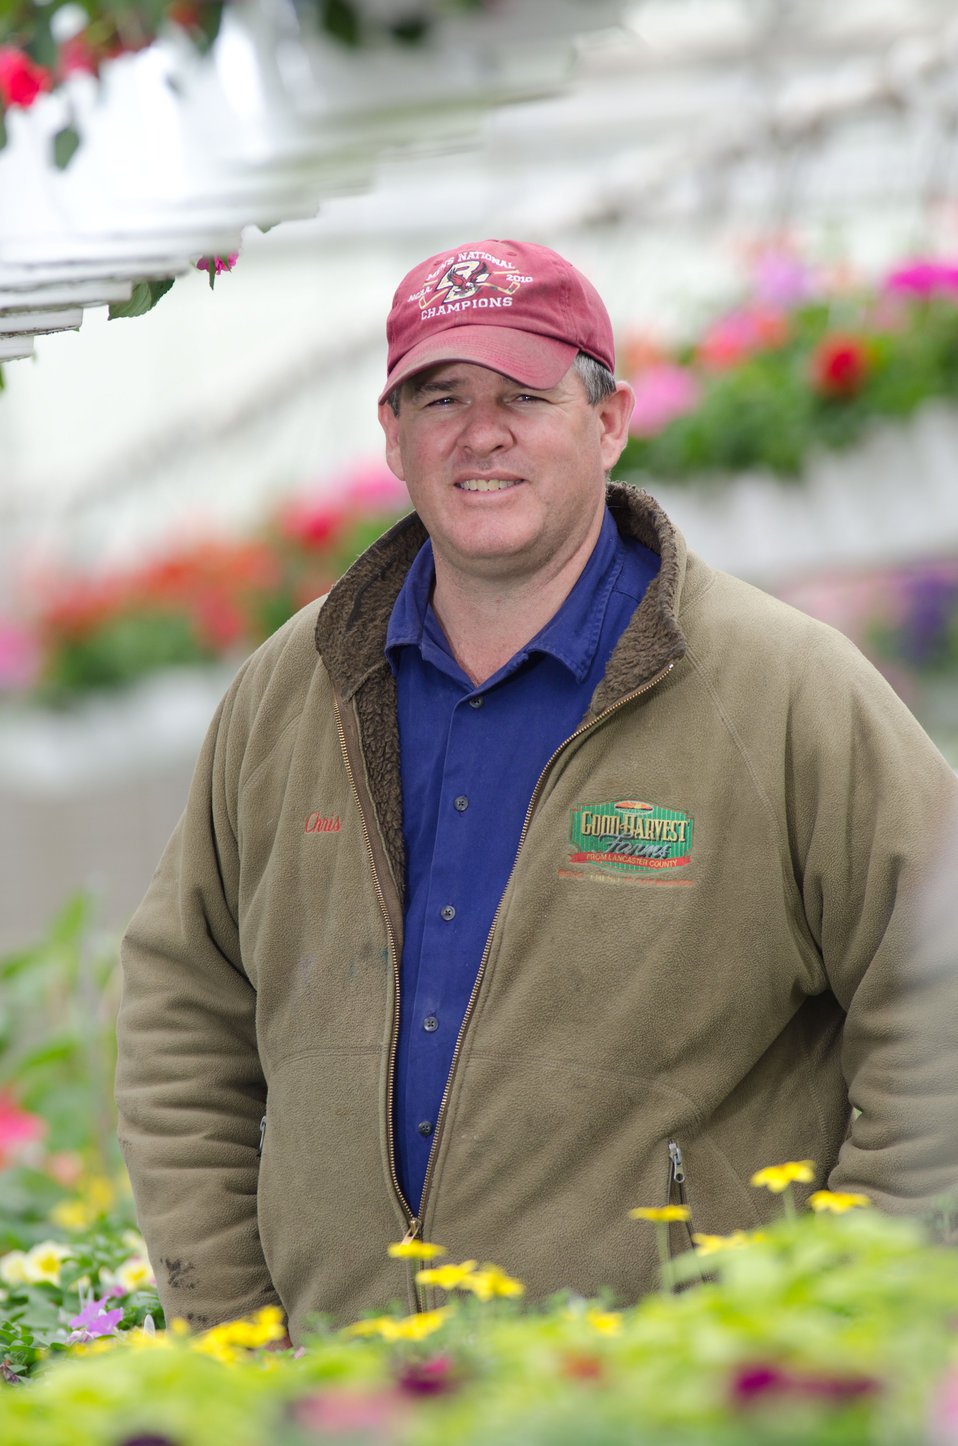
Chris Powell watches his business blossom at Good Harvest Farm on April 19, 2011 in Strasburg, PA. The nursery completed a Rural Energy for America Program (REAP) grant supported renovation six months ago that replaced an 80-year old structure with a new 4,000 sq. ft. facility that features energy efficient glass roof with curtains that block or trap heat, radiant heaters in or above the floor, and the replacement of an oil-fired hot-air furnaces with propane fueled boilers that supply fin-tube and cement embedded tube elements with hot water. With current fuel prices, there is a projected 2011 energy cost savings of more than $20,000; a 40% reduction in energy costs – exceeding projected savings. Plant health and quality has improved and been more consistent because the temperature and humidity is computer controlled and distributed evenly throughout the facility. Utilizing sensors and a roof mounted weather station the system can maintain four different climate zones 24-hours a day. Two 1,000,000 BTU propane fueled boilers heat the water to 190 degrees for the 8,000 feet of fin-tube heating elements were used where the original foundation, and the 8,000 feet of tubing that was embedded in a new cement foundation. After traveling through the energy efficient system, water only looses 20 degrees. When temperatures become to hot, motorized roof vents open to allow rising heat to escape; a 98% energy savings from massive fans that previously forced air out. Both systems create a microclimate in and round the plant trays in the growing and sales room. Representing Good Harvest Farm Chris Powell says, “You don’t need to have a lot of land to have a lot of green houses. There are places in cities where vegetables are grow on store roof tops and selling them below in the same structure.”